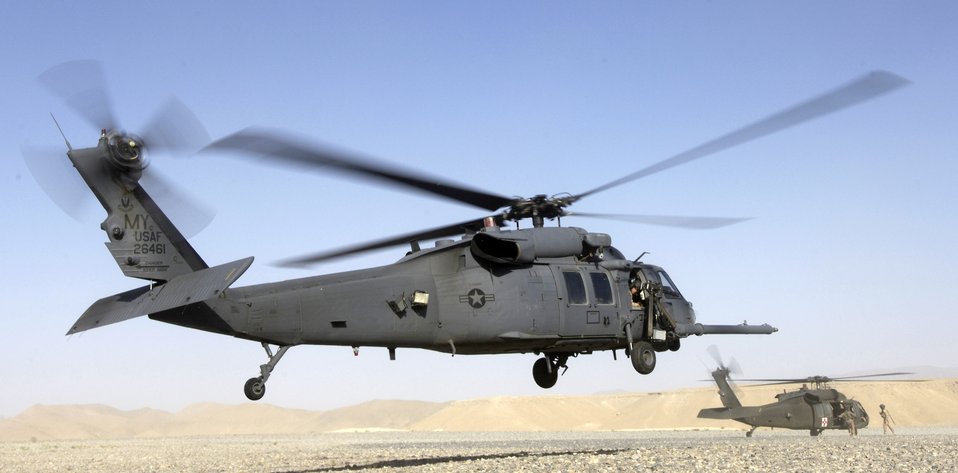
Air Force aids Army with medevac missions

An HH-60 Pave Hawk helicopter lands as an Army UH-60 Blackhawk prepares to pick up a medivac patient June 13. The 33rd Expeditionary Rescue Squadron is the first squadron to have a combat-search-and-rescue mission and a medevac mission, and is based at Kandahar, Afghanistan.